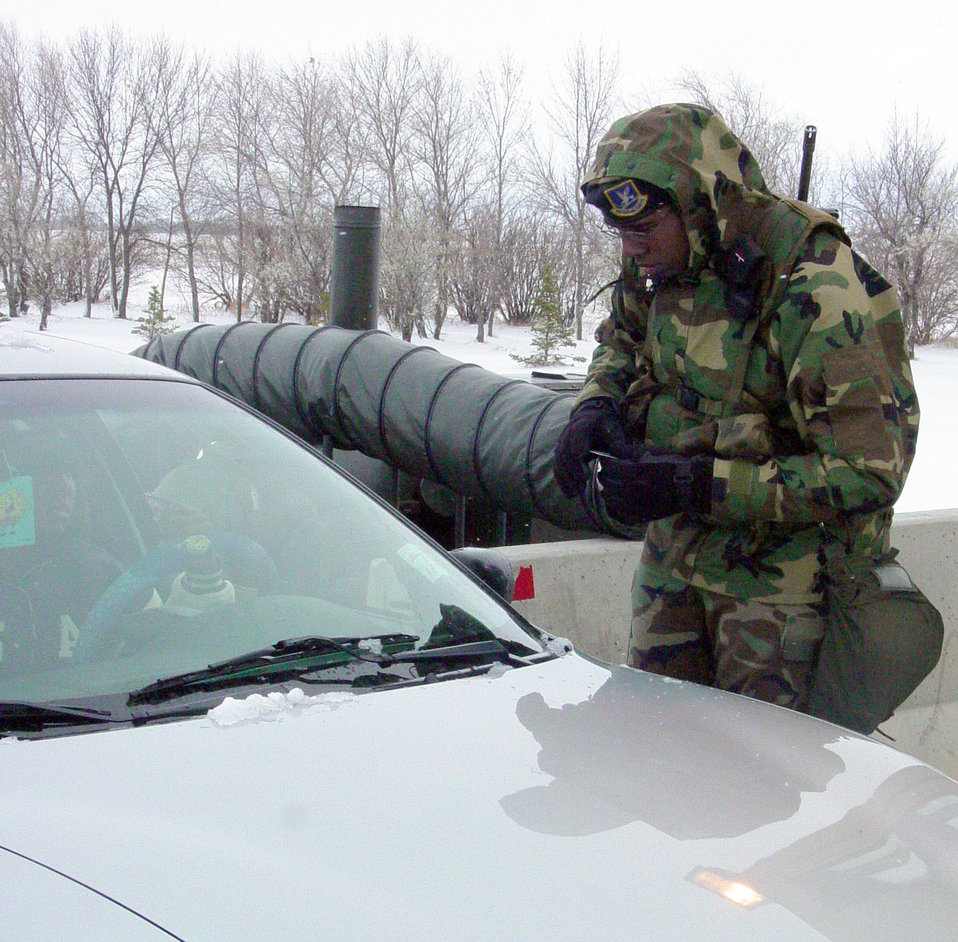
Chilly Security

MINOT AIR FORCE BASE, N.D. (AFPN) -- Airman Leon Harris checks identification cards at a base here Oct. 30. A winter storm passed through the area during the night reducing temperatures to 26 degrees -- 14 degrees with wind chill -- and dropping six inches of snow. Harris is assigned to the 5th Security Forces Squadron.